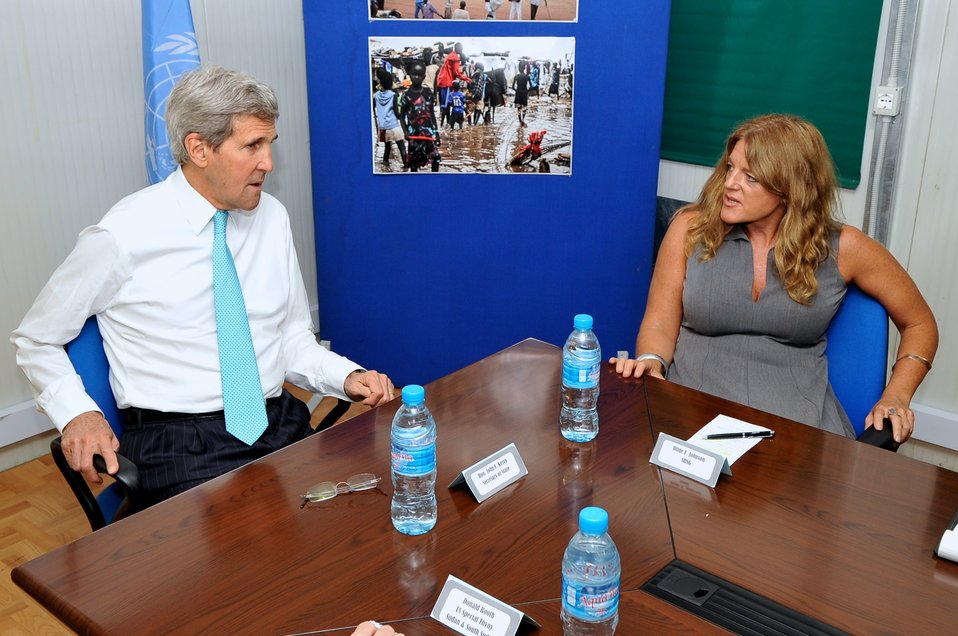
Secretary Kerry Meets With UNMISS Special Representative Johnson in South Sudan

U.S. Secretary of State John Kerry meets on May, 2, 2014, with UNMISS Special Representative Hilde Johnson, who runs a United Nations camp in Juba set up for South Sudanese residents displaced by their country’s civil war.